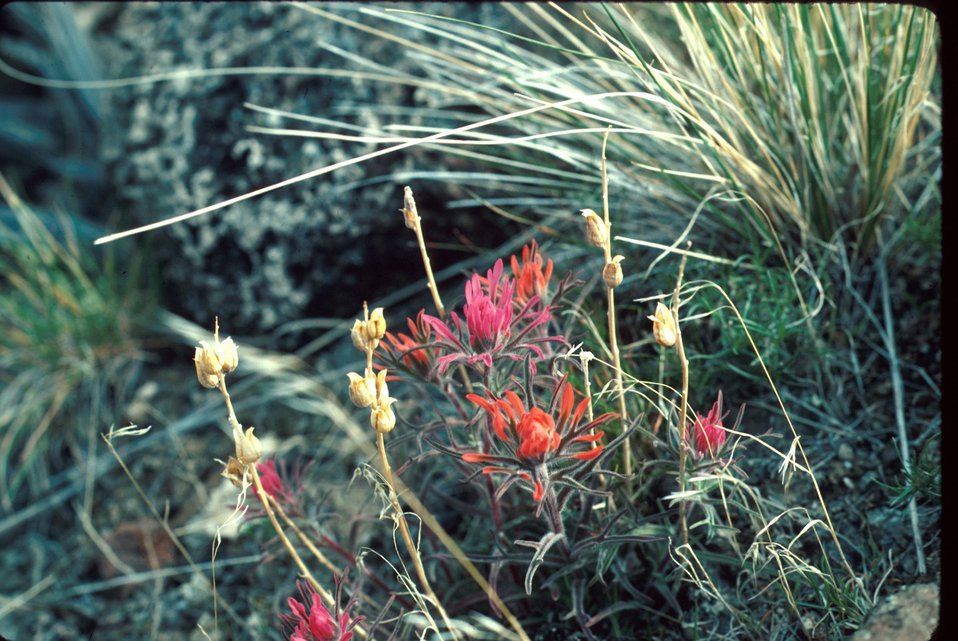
Castijilla chromosa Indian paintbrush Wildflower